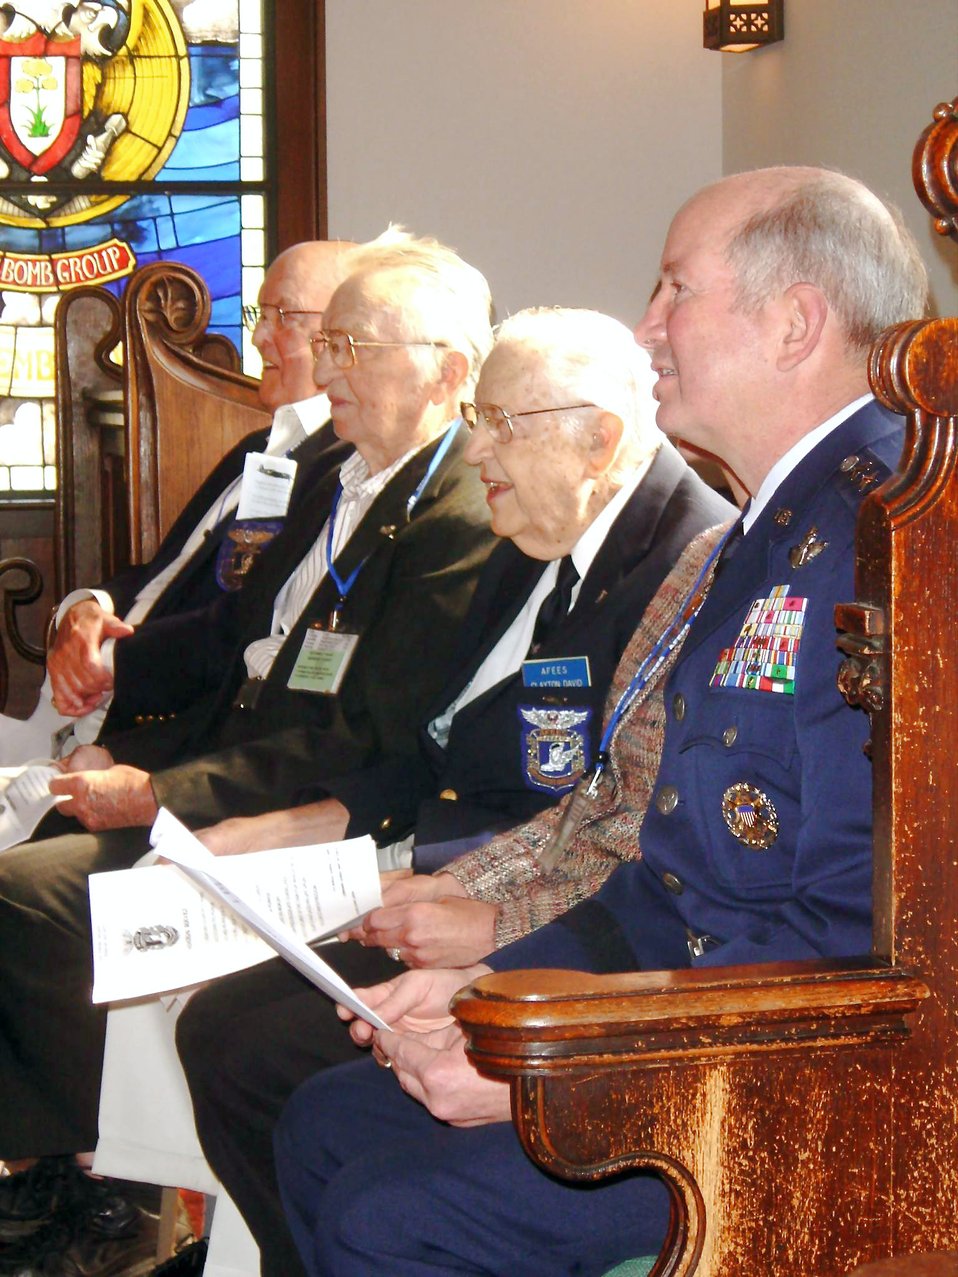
Vice chief honors World War II Airmen, heroes

Air Force Vice Chief of Staff Gen. Duncan J. McNabb sits with members of the Air Forces Escape and Evasion Society April 26 during their 44th annual reunion near Savannah, Ga. General McNabb was the keynote speaker for the event, held in honor of Air Force veterans who were forced down behind enemy lines and avoided or escaped capture during World War II.